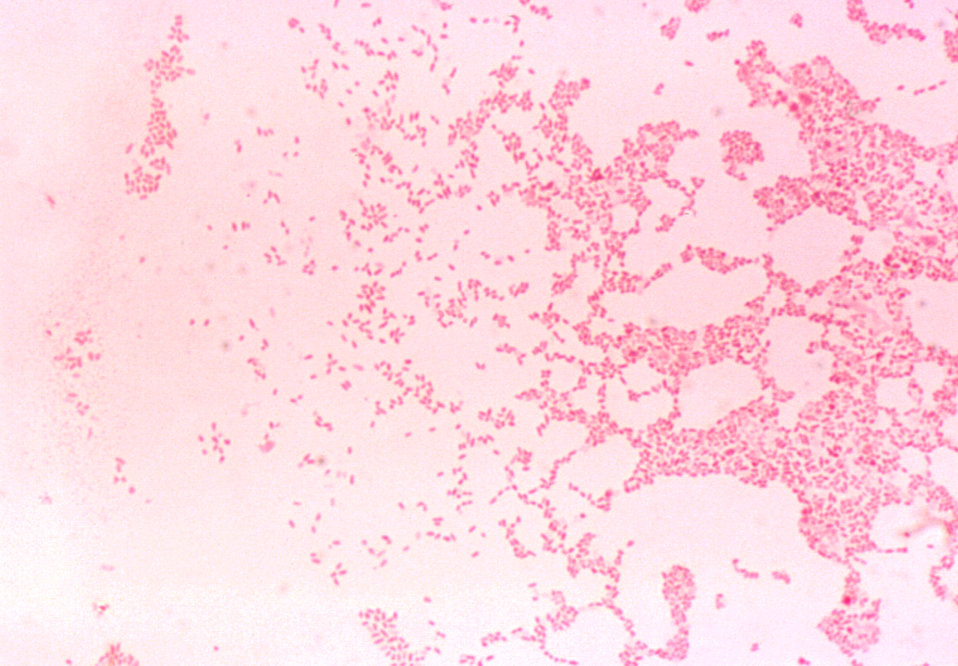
Brucella melitensis Gram-stain.